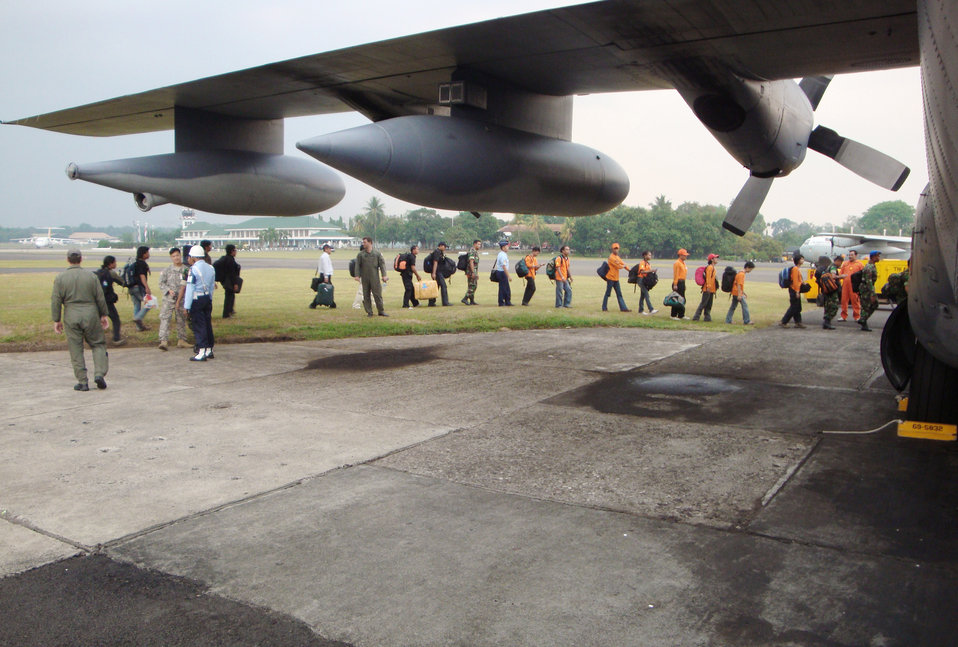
Kadena Airmen aid Indonesian recovery operations

Members of the 353rd Special Operations Group, Indonesian air force members and emergency response teams board a MC-130P Combat Shadow Oct. 2, 2009, at Bandung, Indonesia. The group immediately started moving emergency response teams, equipment and relief supplies to the Padang area to support humanitarian relief operations after a 7.6 magnitude earthquake and a slightly smaller one struck the area Sept. 29 and Oct. 1. The 353rd SOG Airmen are from Kadena Air Base, Japan.